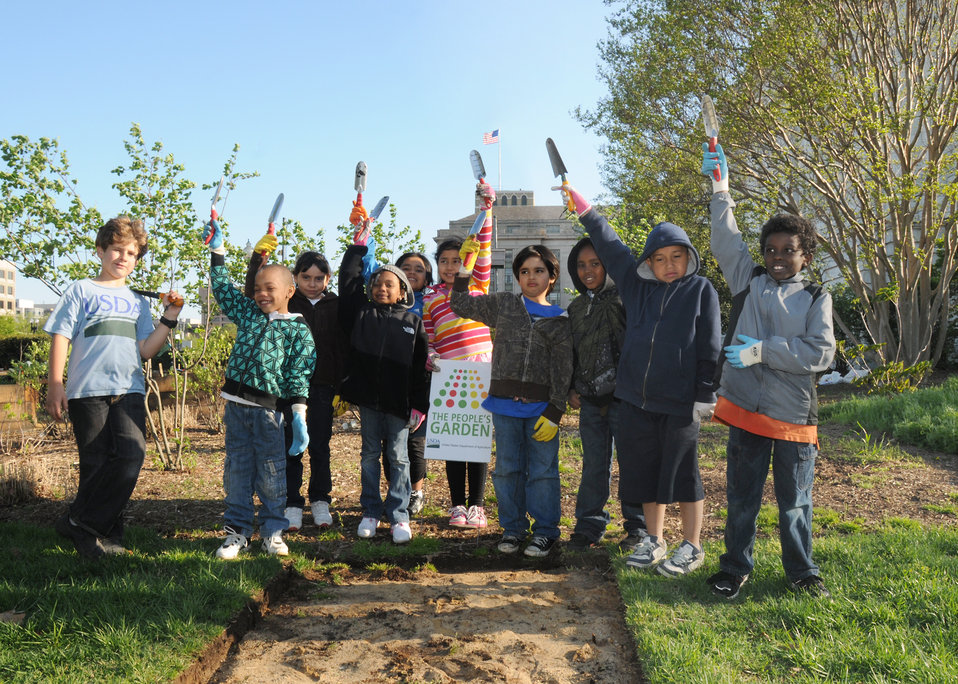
It is shovels up for the young people from the non-profit Jubilee Housing organization's after school youth services program and a young USDA volunteer at the U.S. Department of Agriculture (USDA) People’s Garden on Friday, Apr. 9, 2010. USDA photo 10di1300-151